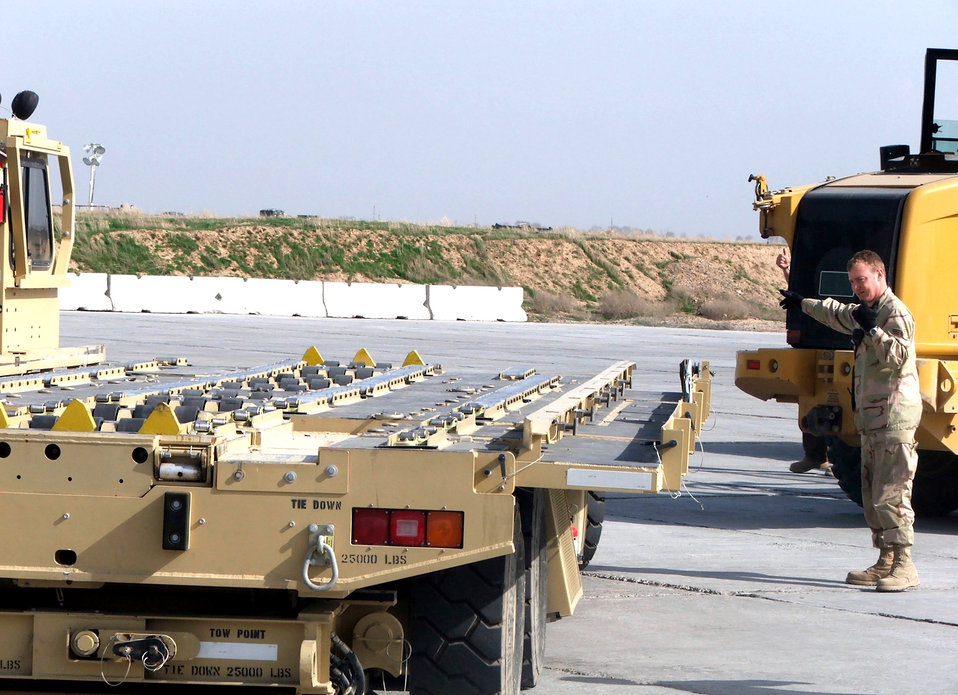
Air terminal operators keep OEF freight, passengers moving

KARSHI-KHANABAD AIR BASE, Uzbekistan -- Senior Airman Fred Koehl guides the driver of an aircraft loader here recently. He is an air transportation journeyman deployed here with the 416th Expeditionary Mission Support Squadron's Air Terminal Operations Center from Maxwell Air Force Base, Ala.